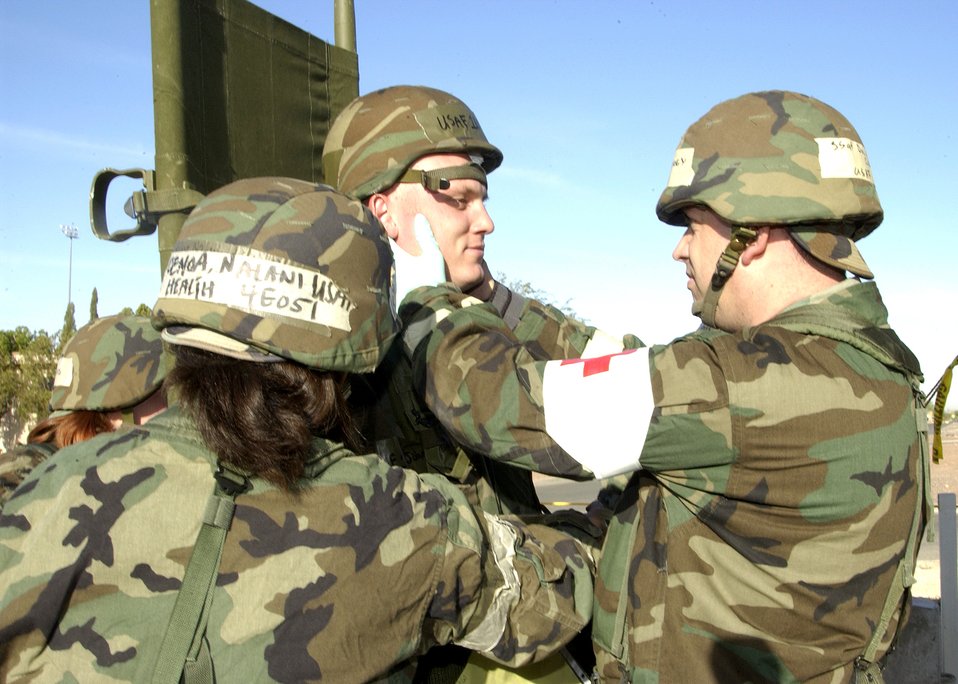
Treating the wounded

DAVIS-MONTHAN, Ariz. (AFPN) -- 1st Lt. John Cotton receives medical attention for a simulated head wound from members of the 355th Medical Group during exercise Bushwhacker 06-01 here. Lieutenant Cotton is with the 355th Logistics Readiness Squadron.